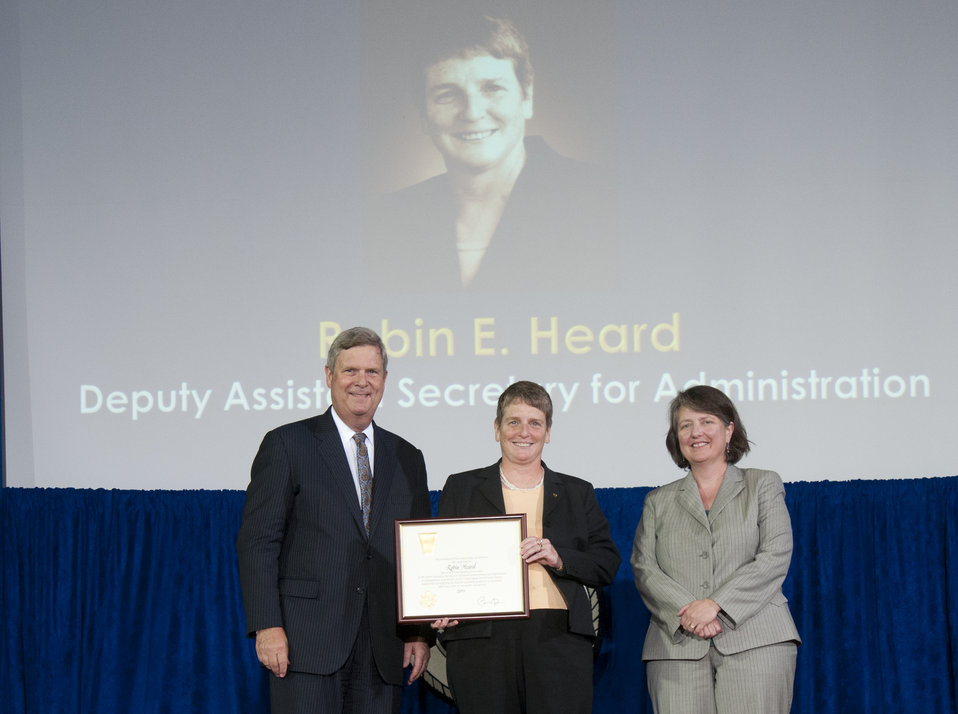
Agriculture Secretary Tom Vilsack and Agriculture Deputy Secretary Kathleen Merrigan present the Presidential Rank Award to Agriculture Deputy Assistant Secretary for Administration Robin E. Heard at the U.S. Department of Agriculture (USDA) 64th Annual Honor Awards Ceremony in Washington, D.C. on Wednesday, Sept. 12, 2012. Presidential Rank Award Winners in the Senior Executive Service receive this award for sustained extraordinary accomplishment in management of programs of the U.S. Government and for leadership exemplifying the highest standards of service to the public, reflecting credit on the career civil service.